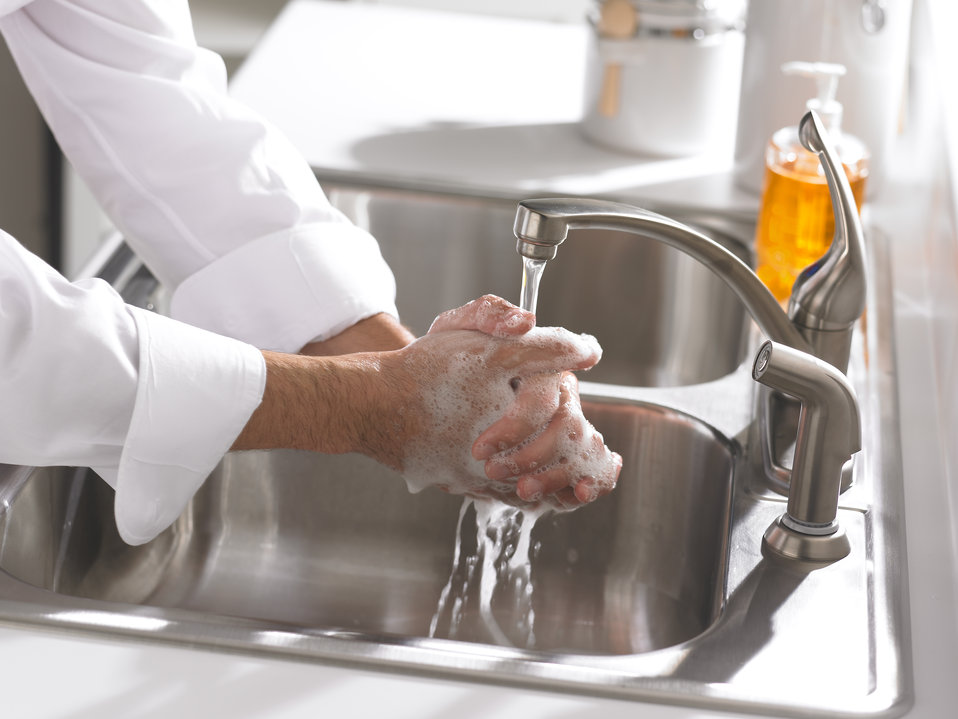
Hand washing after handling raw meat or poultry or its packaging is a necessity because anything you touch afterwards could become contaminated. Wash hands with warm water and soap for 20 seconds before and after handling food.